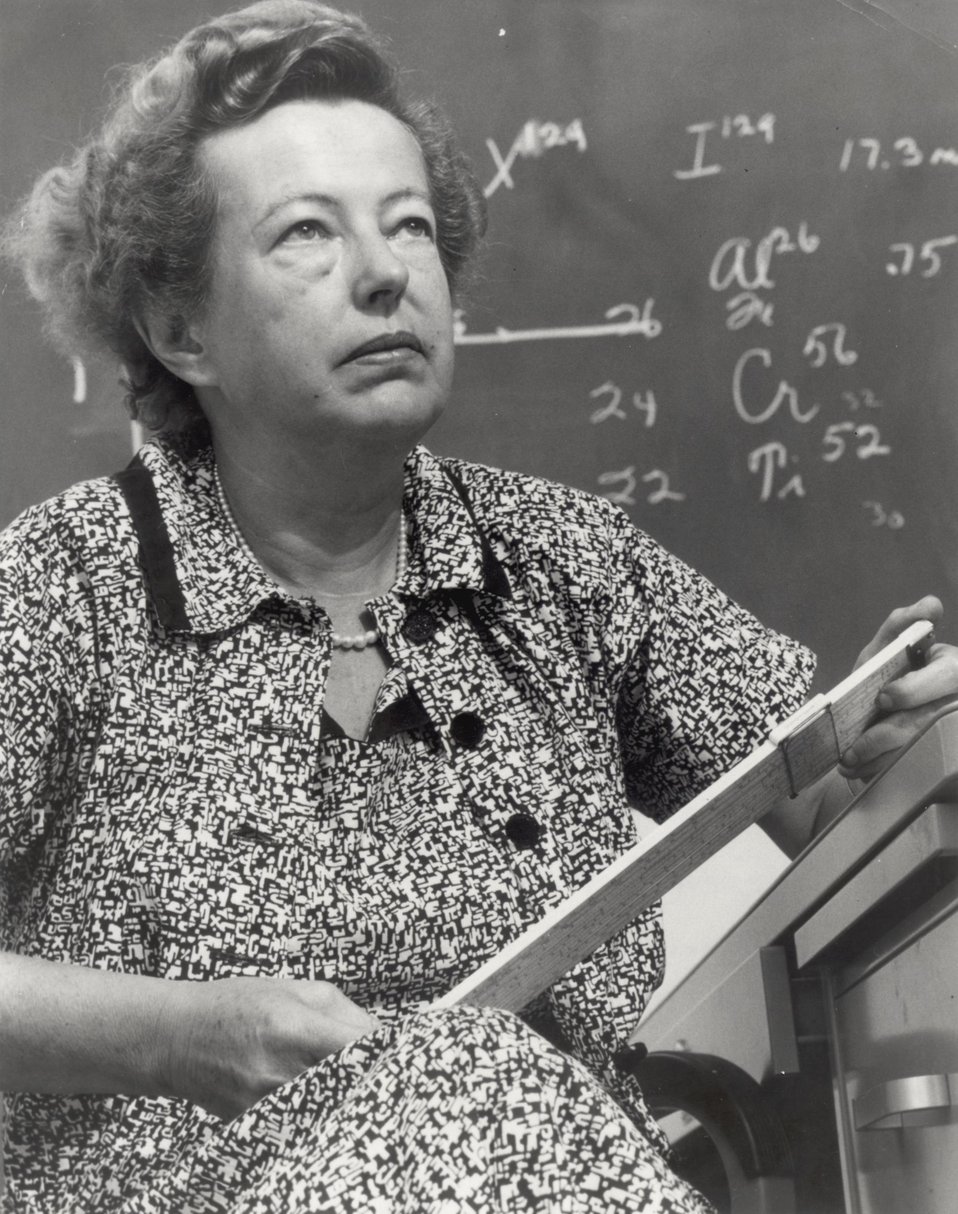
PORTRAIT OF DR.MARIA GOEPPERT - MAYER.